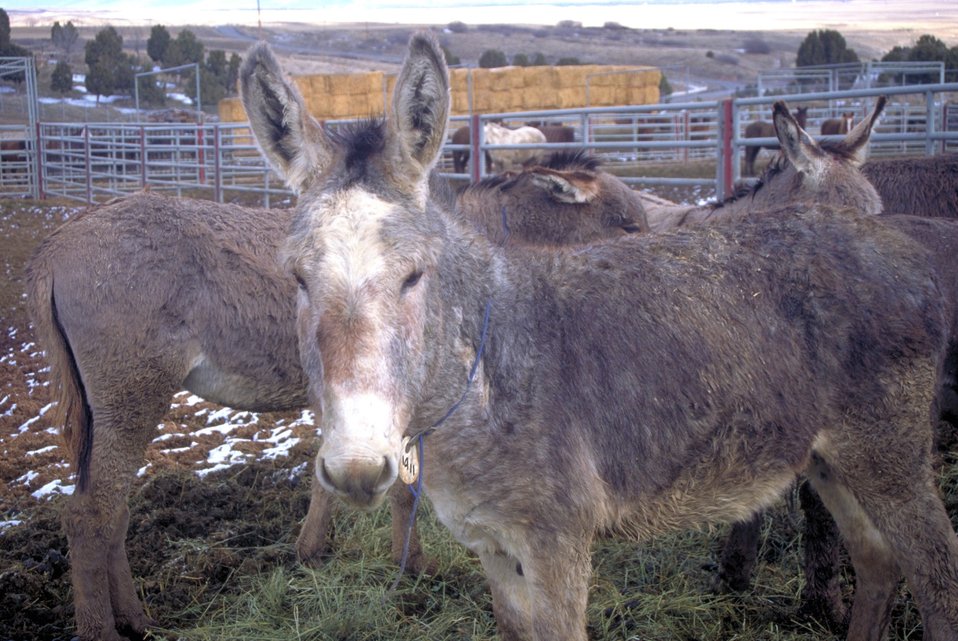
Salt Lake Regional Wild Horse and Burro Center Butterfield Canyon.